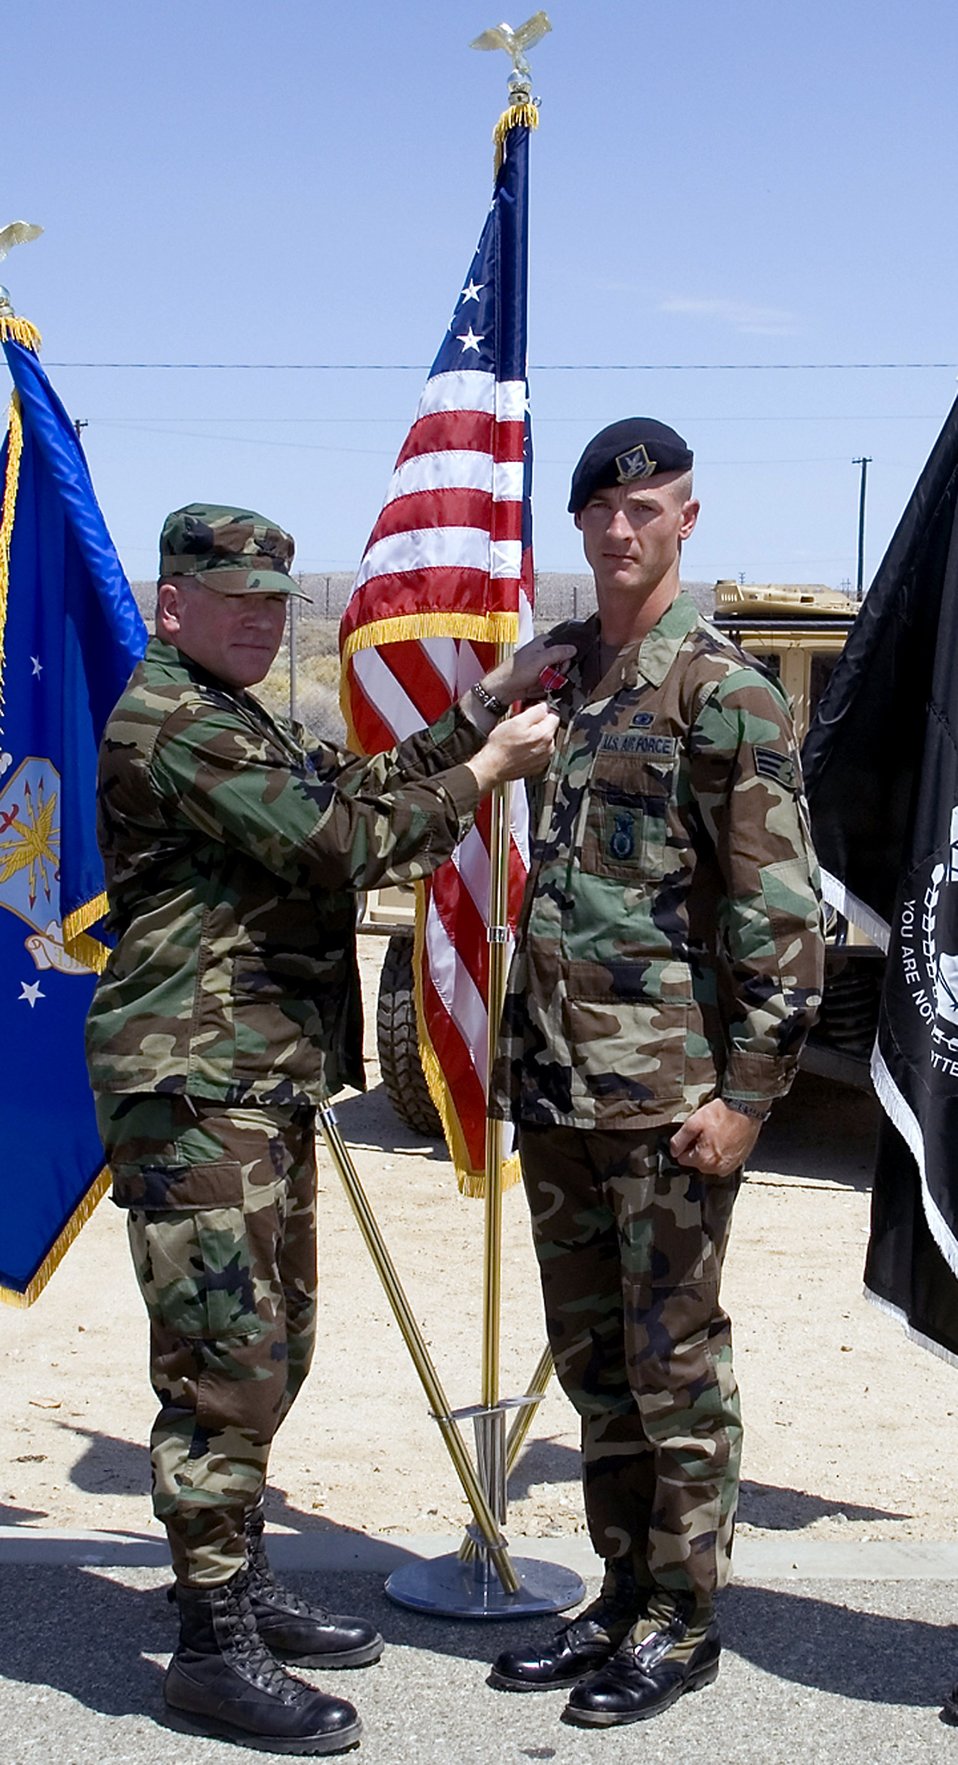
Security forces Airman earns Bronze Star Medal with Valor

Col. Bryan Gallagher, the 95th Air Base Wing commander, pins the Bronze Star Medal with Valor on Senior Airman Phillip King at at Edwards Air Force Base, Calif., July 30. Airman King, a 95th Security Forces Squadron patrolman, received the award for his gallantry during a deployment in in Afghanistan supporting Operation Enduring Freedom.